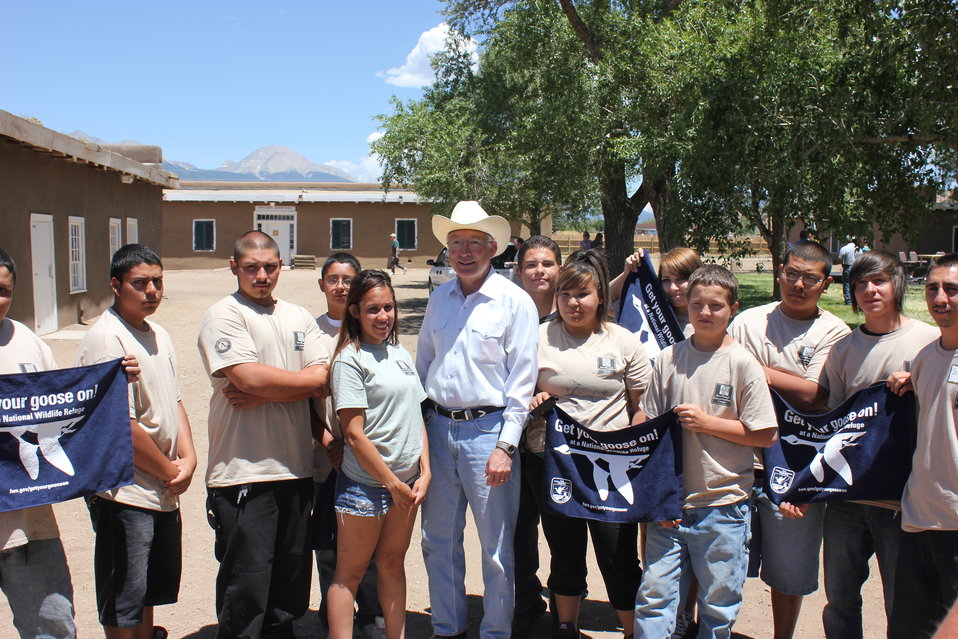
Secretary Salazar and Southwest Conservation Corps Youth

These youngsters helped prepare the grounds for the announcement of one of the largest conservation easement donations in the history of the country. Afterwards, they had the honor of meeting the Secretary of the Interior, Ken Salazar. In this photo they proudly display their Get Your Goose On! towels.